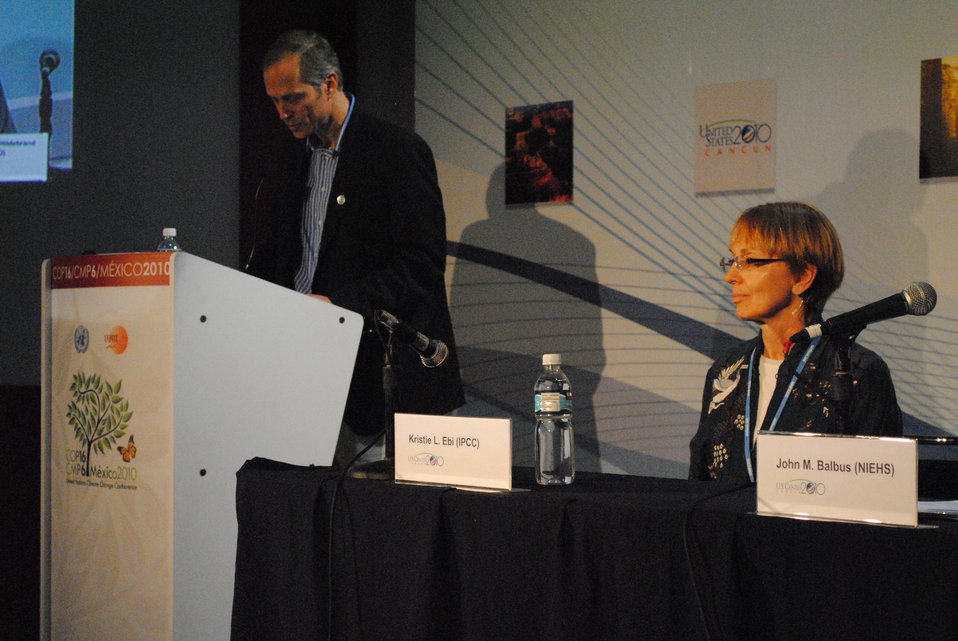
'Climate Change and Human Health' Panelists Respond to Questions

Panelists on the 'Climate Change and Human Health' side event respond to questions at the U.S. Center at COP-16 in Cancun, Mexico, on December 3, 2010.